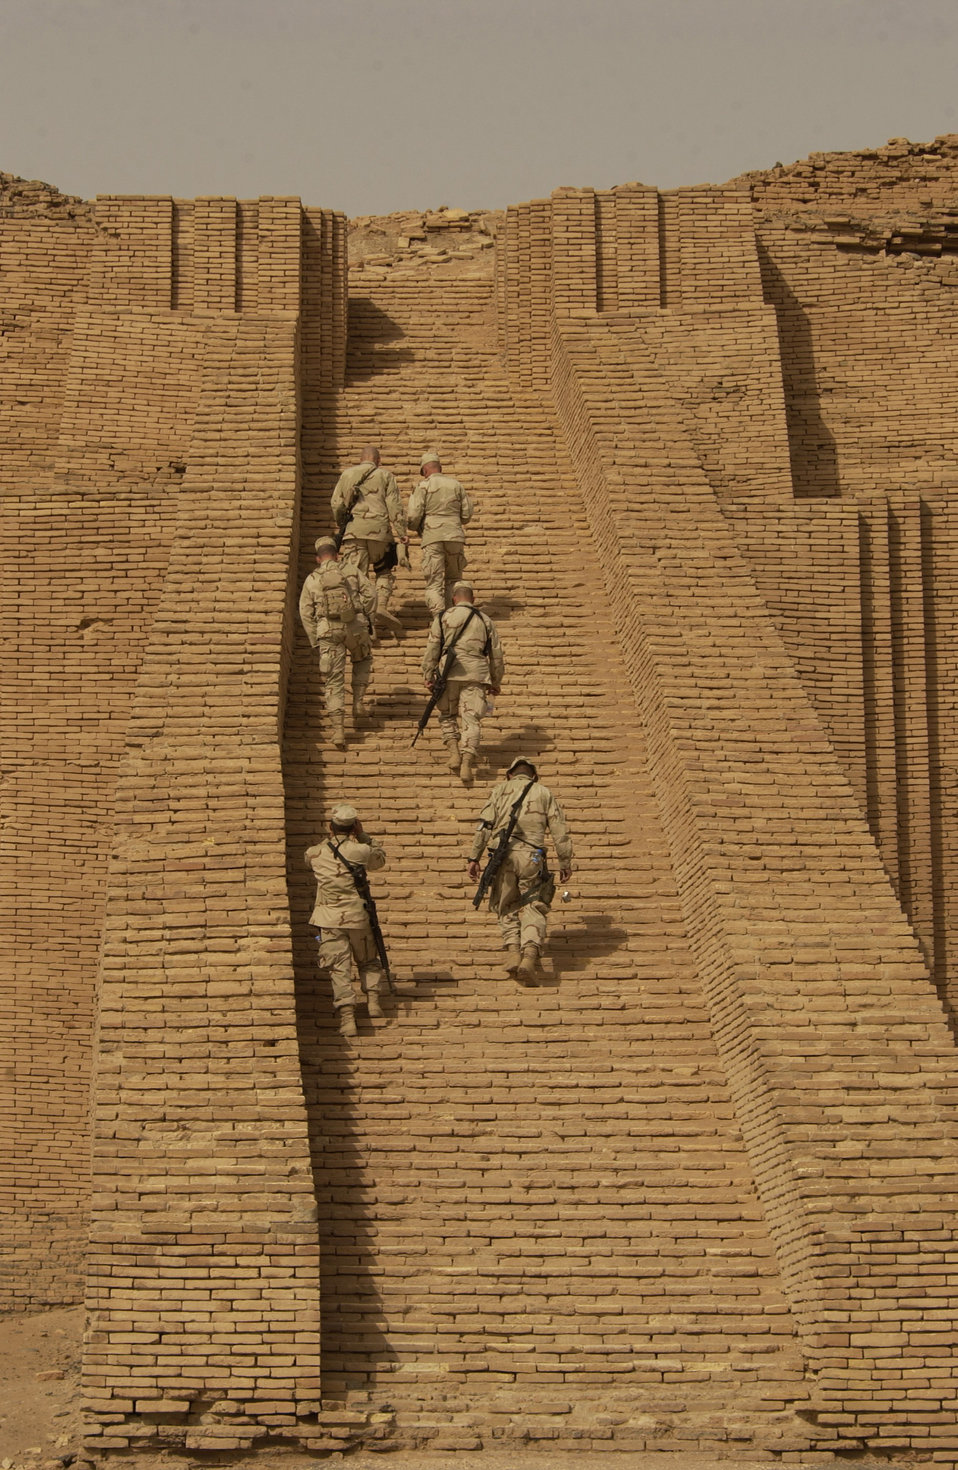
Stepping

ALI BASE, Iraq -- U.S. servicemembers climb the stairs of a local ancient temple recently. The Ziggurat in Ur was built by a Sumerian king during the Third Dynasty. U.S. and coalition forces in Iraq are assisting in its preservation and protection by keeping it within the boundaries of Ali Base.